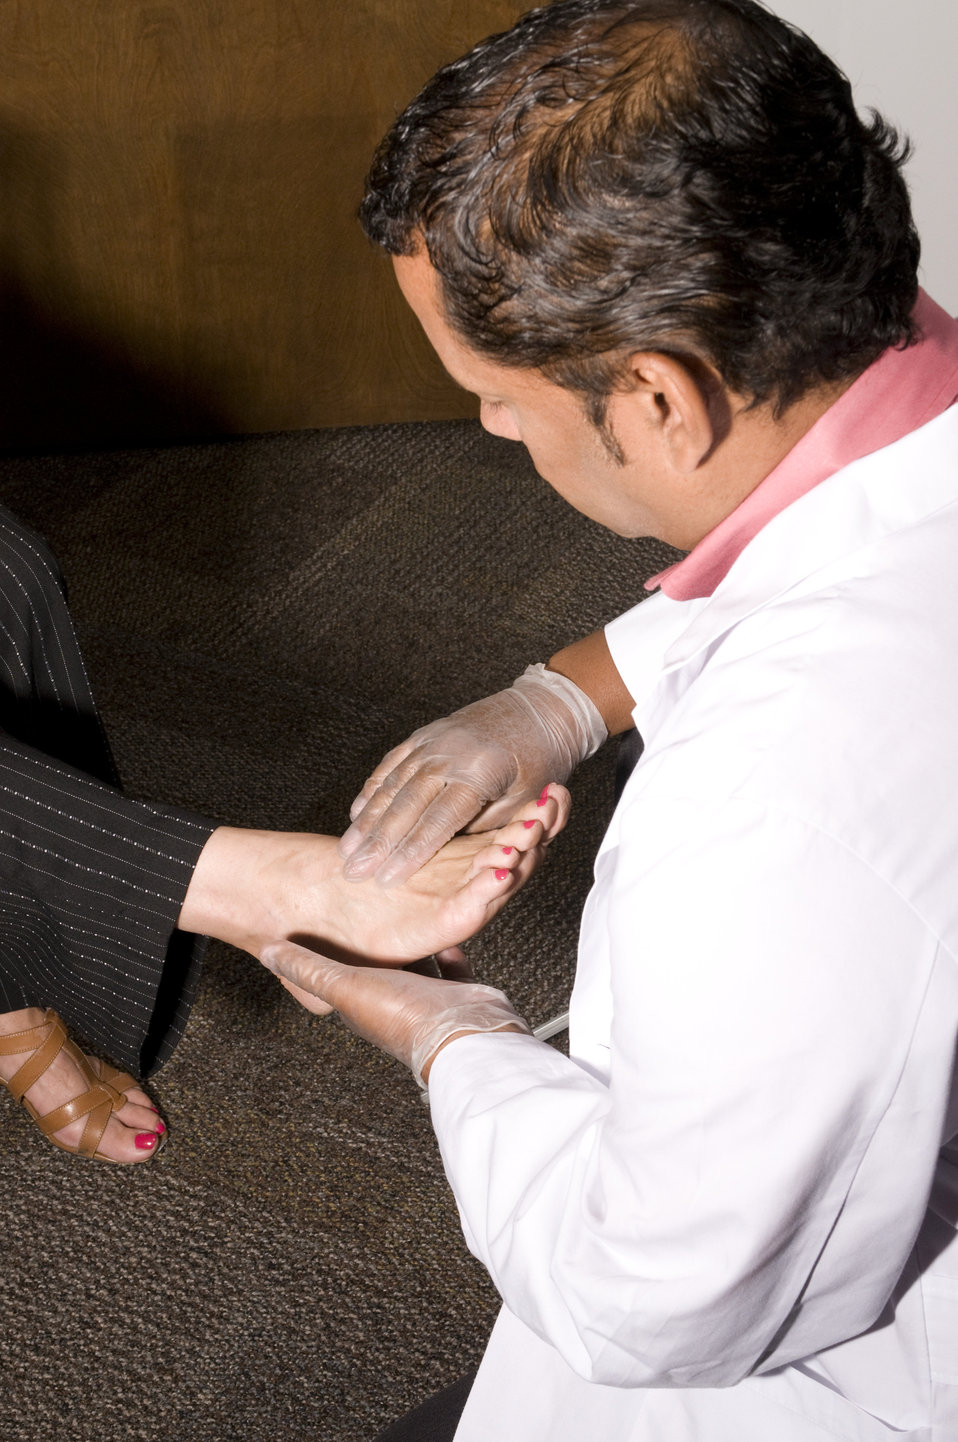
The healthcare practitioner depicted in this image was in the process of carrying out his assessment of the symptoms experienced by his female patient related to her diabetic condition. Here, we see the physician examining his patient's right foot.